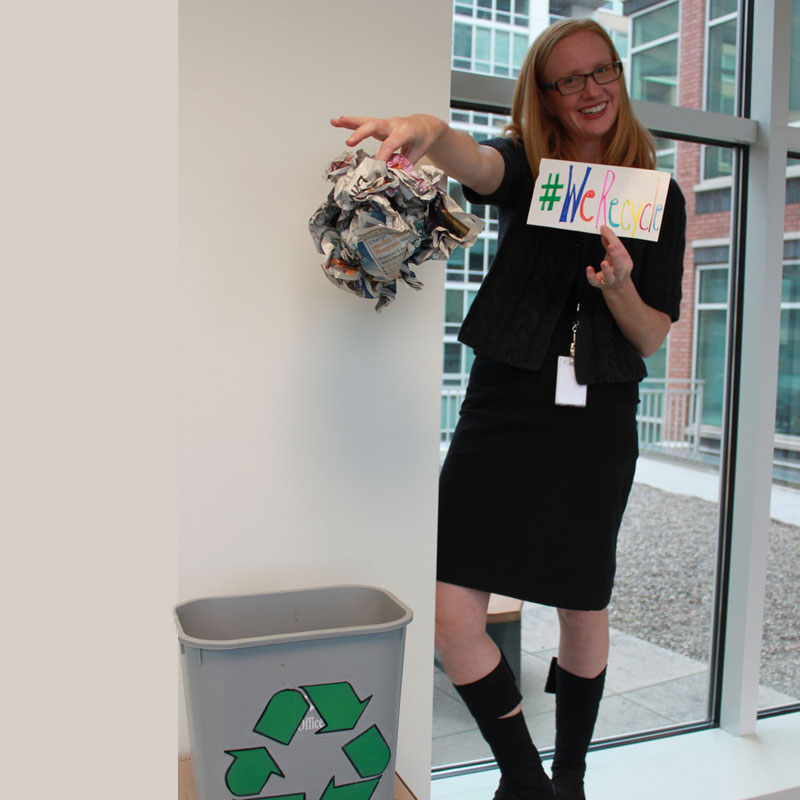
EPA Employee Ellie Recycles

At EPA, #WeRecycle. Learn how you can too: www2.epa.gov/recycle